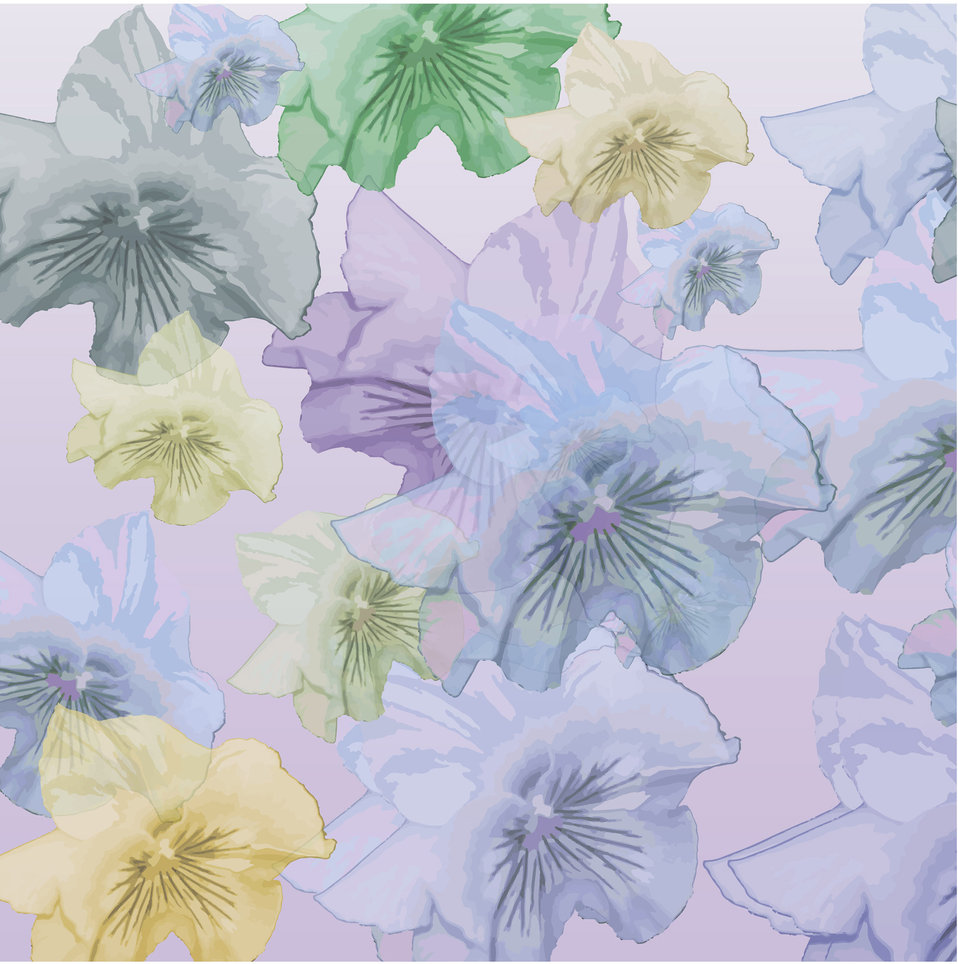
Pansy flower background

Pansy flower bloom background with summer flavour.